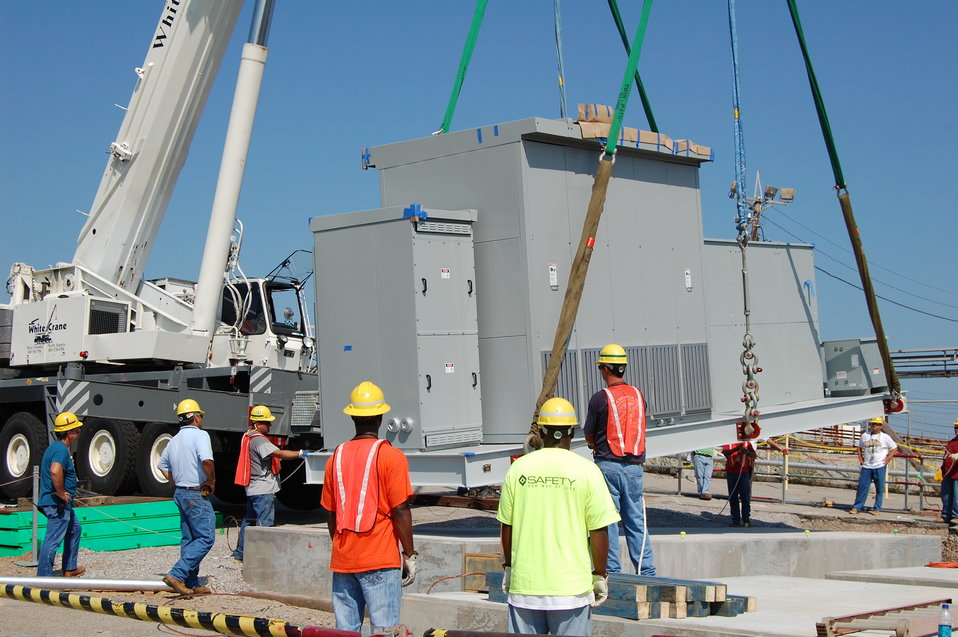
Savannah River Site Enters Final Recovery Act Year with Many Accomplishments

In just a year and a half, the Recovery Act’s $1.6 billion investment in Savannah River Site (SRS) has sparked dramatic progress, putting thousands of people to work to complete cleanup projects that are safely processing nuclear waste for storage and reducing the footprint of the Cold War-era at SRS.